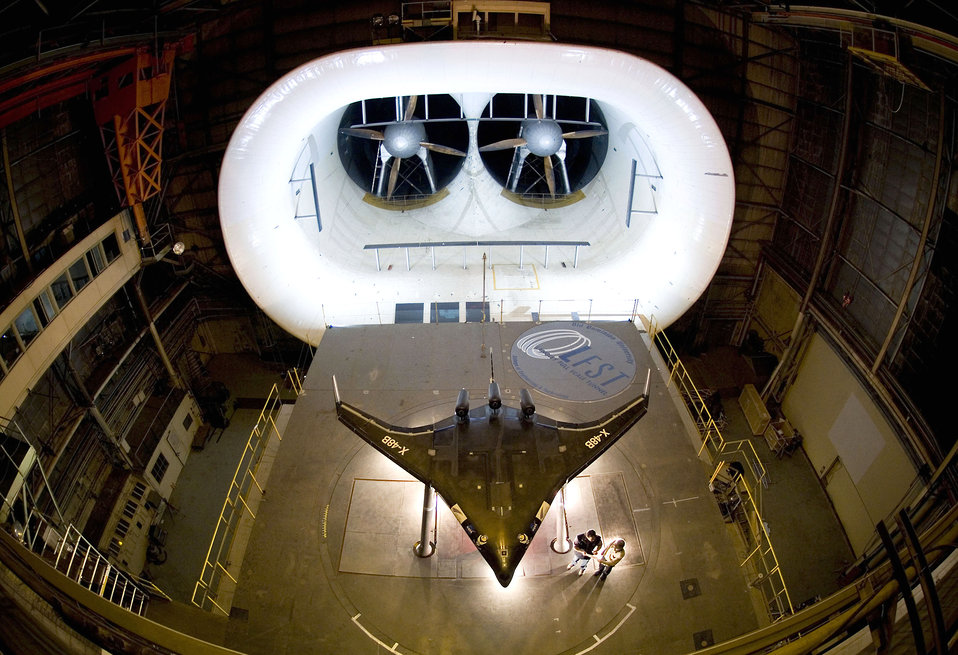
Research lab tests fuel-efficient, flying-wing aircraft

Engineers have installed a small-scale blended wing body prototype at the full scale wind tunnel at NASA's research center at Langley Air Force Base, Va. The Air Force Research Laboratory partnered with Boeing Phantom Works and the National Aeronautics and Space Administration to study the structural, aerodynamic and operational advantages of the advanced aircraft concept, dubbed the X-48B.